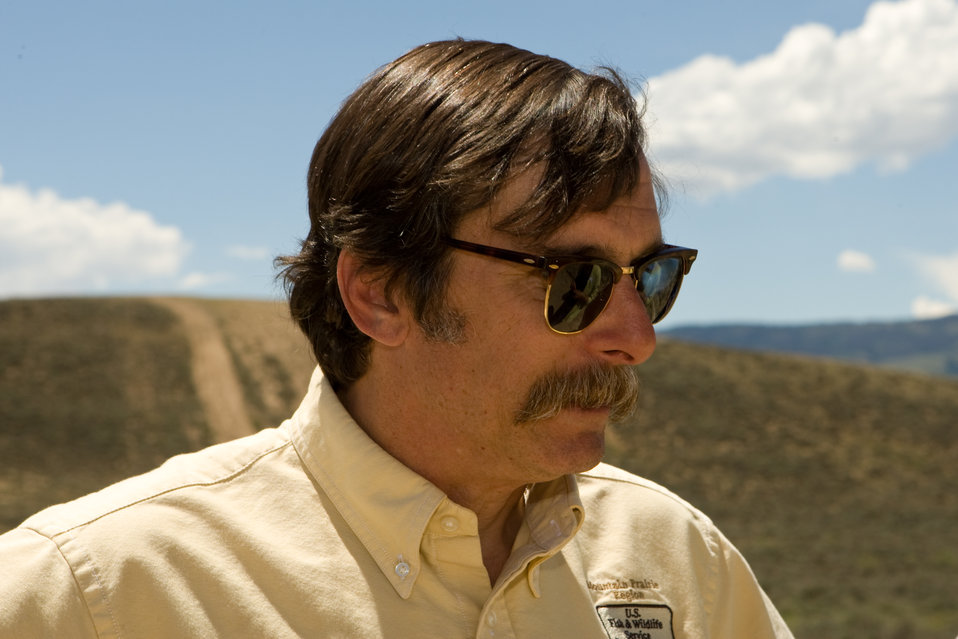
Colorado Rare Plant Conservation Initiative

The Colorado Rare Plant Conservation Initiative (RPCI) is a partnership of 23 statewide and regional agencies, private organizations, and academic institutions working to conserve 121 rare plants in Colorado. As part of these efforts the group developed the Colorado Rare Plant Conservation Strategy, developed Best Management Practices to reduce energy development impacts, addressed climate change, and developed focused strategies for the conservation of individual species at eight priority landscapes. The group has also worked to coordinate volunteer efforts for plant conservation across the state.